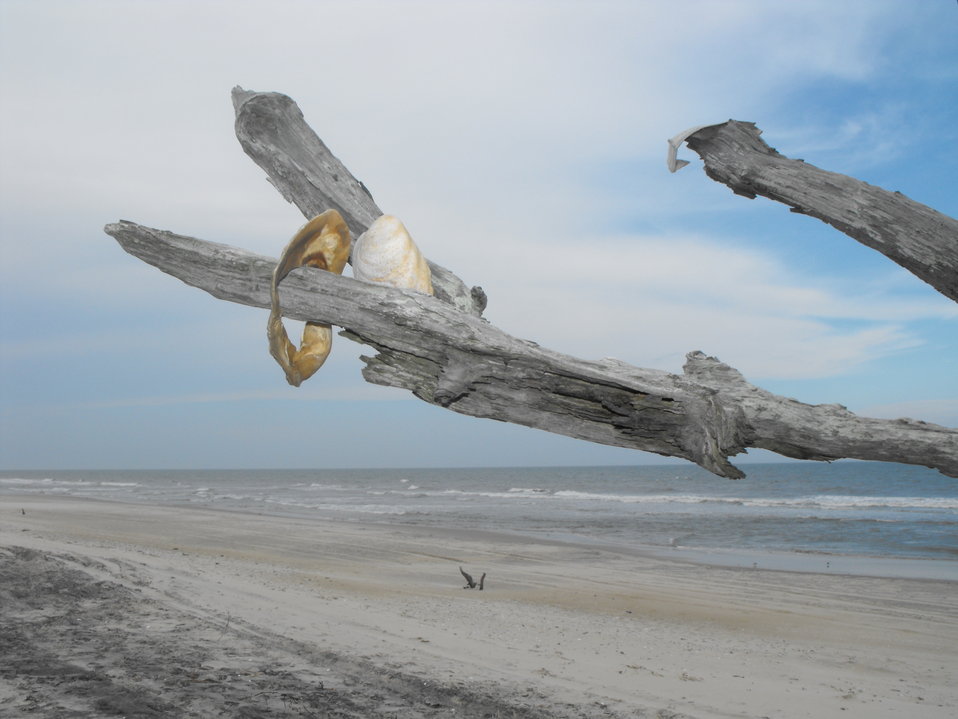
Shell Tree

One of the 'shell trees' on Wild Beach at Chincoteague National Wildlife Refuge / Assateague Island National Seashore. Visitors like to decorate the remnants of trees, once in the marsh but now overtaken by the beach as it shifts.